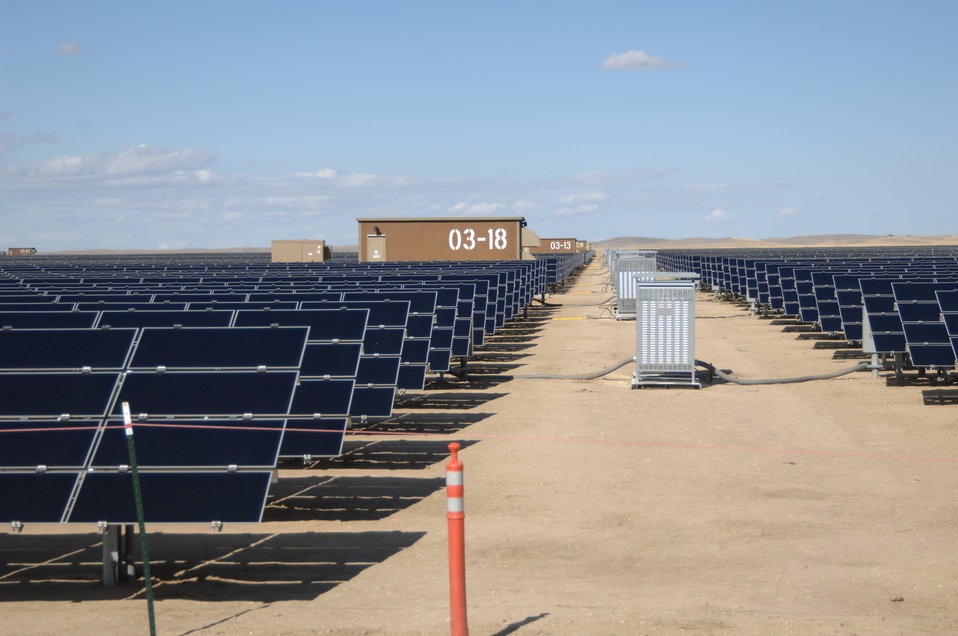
Solar Panels at Topaz Solar 6